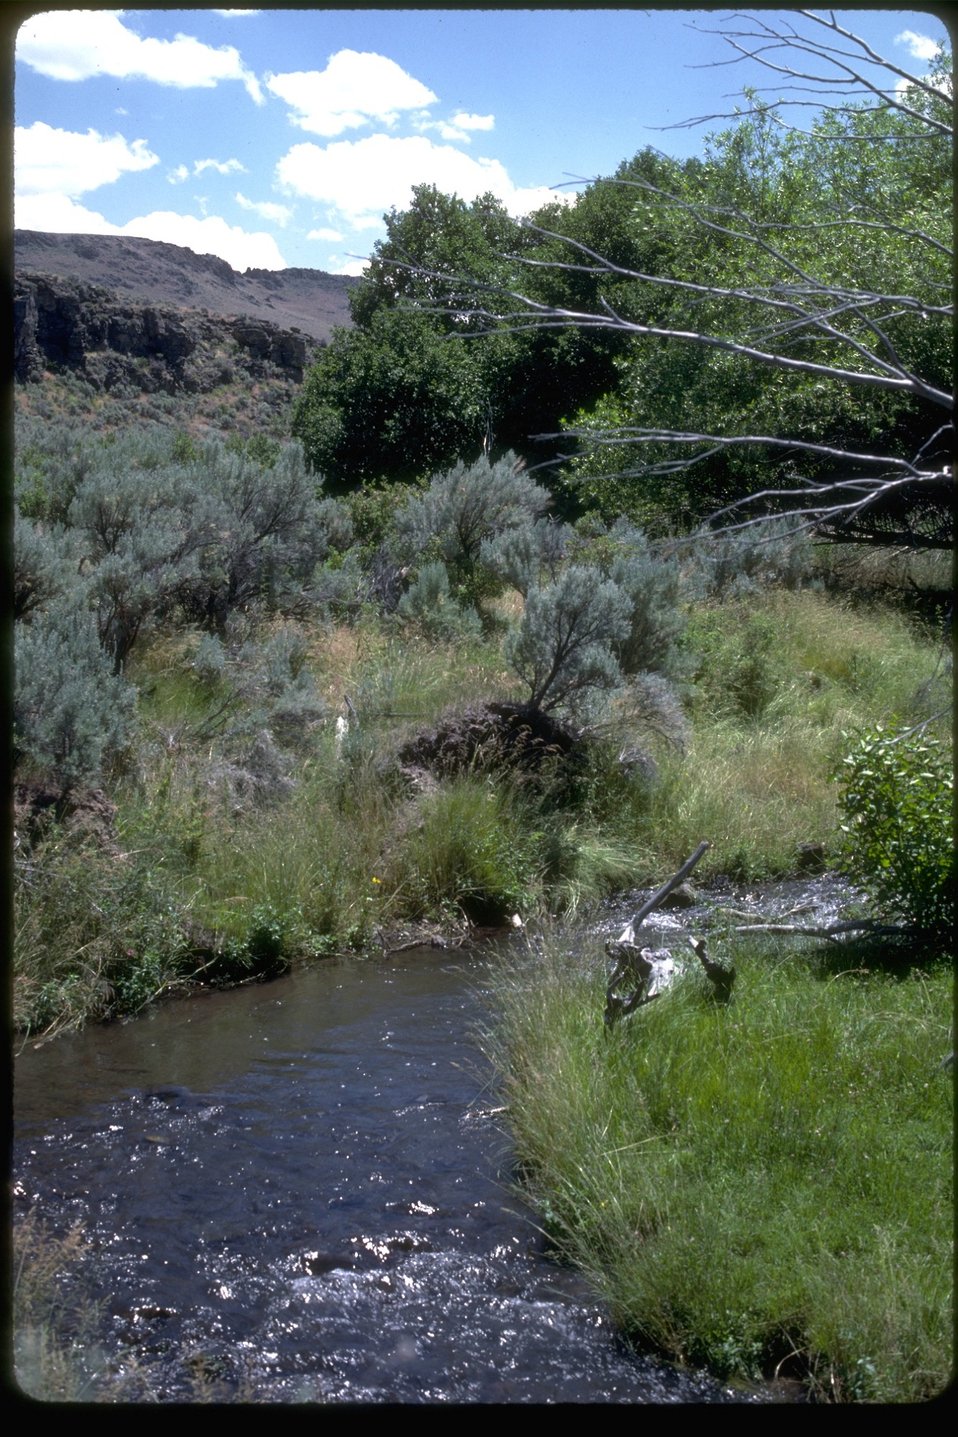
Willow Creek: a good shot of the riparian area.